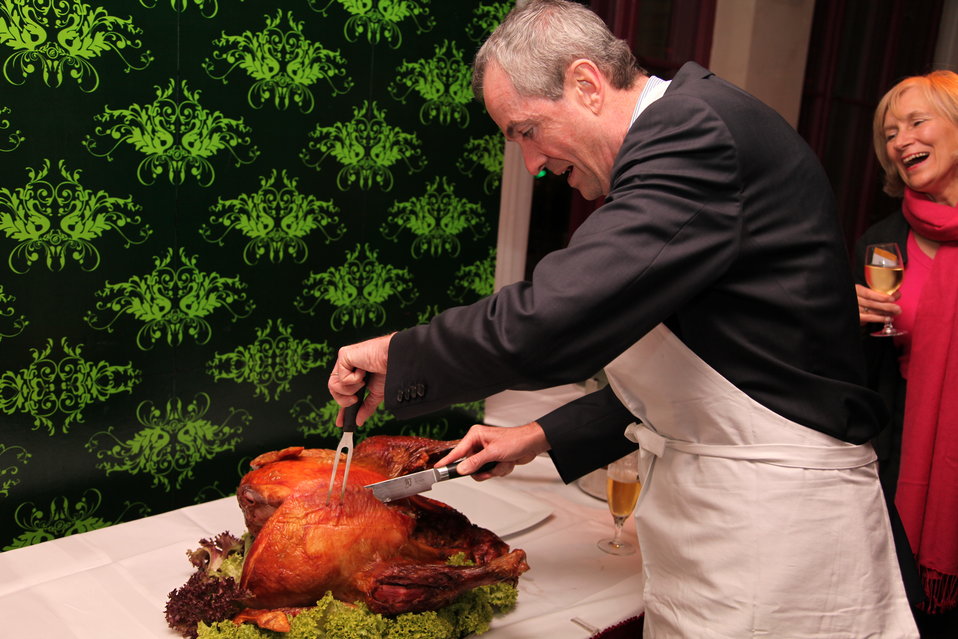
Ambassador Murphy Carves the Turkey for a Thanksgiving Celebration

After giving a welcome address at a joint Thanksgiving celebration of the German Fulbright Commission, the Alexander von Humboldt Foundation and the German Academic Exchange Service (DAAT) at the Kulturbrauerei, U.S. Ambassador to Germany Philip D. Murphy carves a turkey in Berlin, Germany, on November 24, 2009.